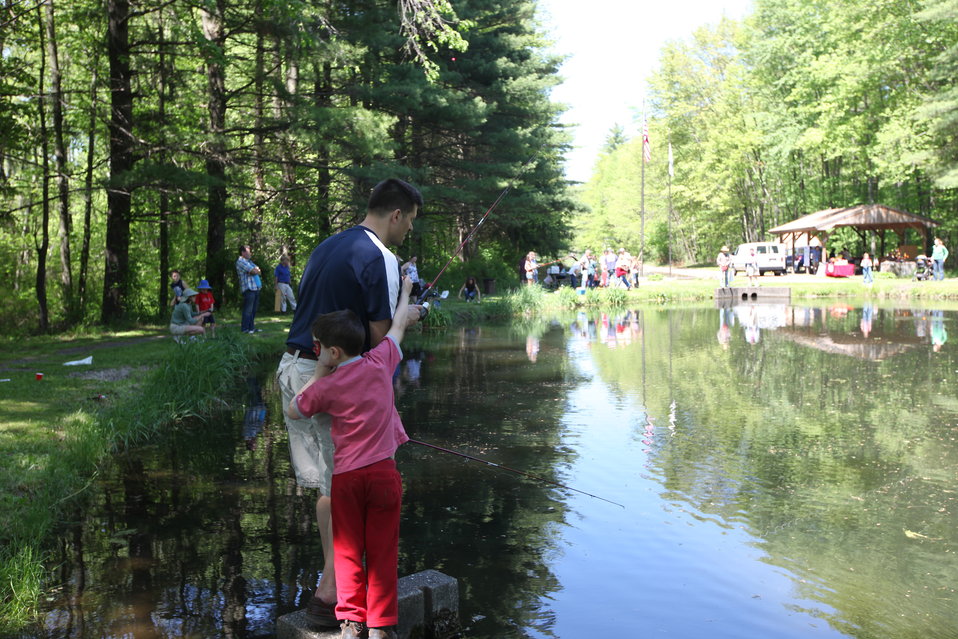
Youth Fishing Derby 2012

Megan Nagel/USFWS